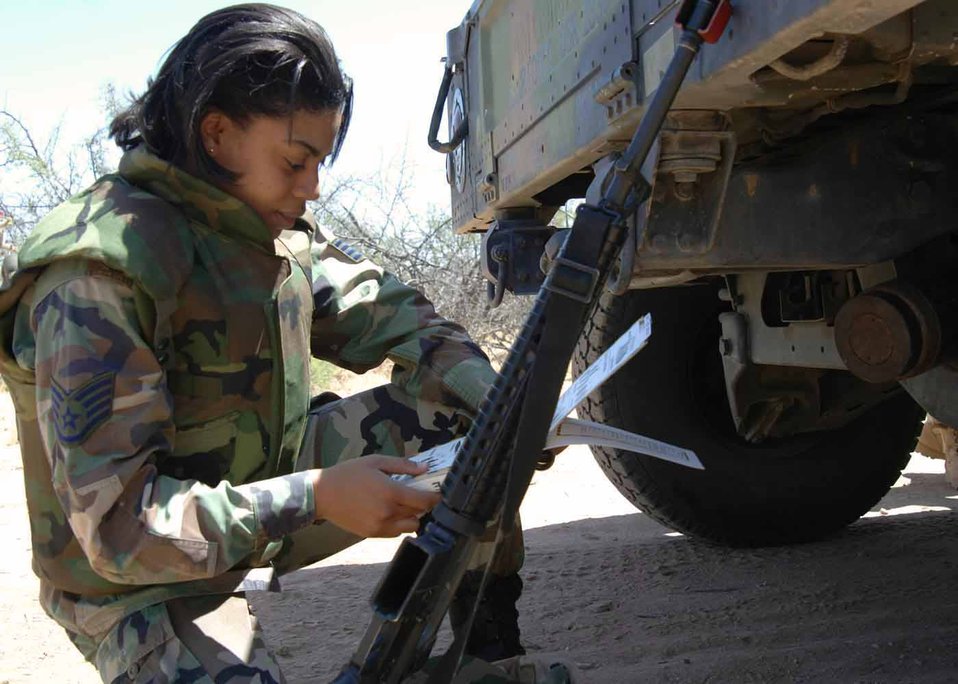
Contingency crawl

DAVIS-MONTHAN AIR FORCE BASE, Ariz. -- Staff Sgt. Christy Stockdale refers to her Airman's Manual as she discovers a simulated unexploded ordnance underneath a vehicle during a deployment training class here. The training prepares Airmen for deployment and day-to-day life during contingency. Sergeant Stockdale is assigned to the 355th Logistics Readiness Squadron.